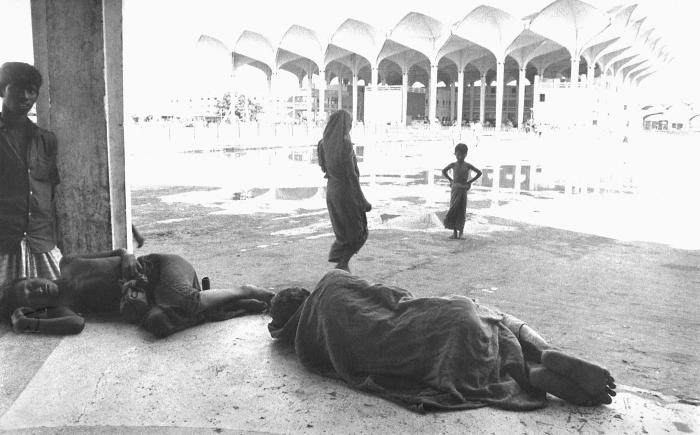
The adolescent boy to the left, and the man pictured here on the right were lying alongside a Bangladesh town road. It is quite possible that the man may have been dead, for many onlookers were stopping in the background to look at the lying man. This photograph provided by Dr. Stan Foster, and captured by Pierre Claquin, M.D., B.A.C., who at the time was a member of the World Health Organization's Smallpox Eradication Program. It was part of a series photographed by former E.I.S. officer, Stanley O. Foster M.D., M.P.H., and was one of a series entitled 'The Story of One Smallpox Jeep', which depicted the travails faced by the jeep, and its occupants of public health practitioners, as they road through the Bangladesh countryside in an attempt to eradicate smallpox from the country.